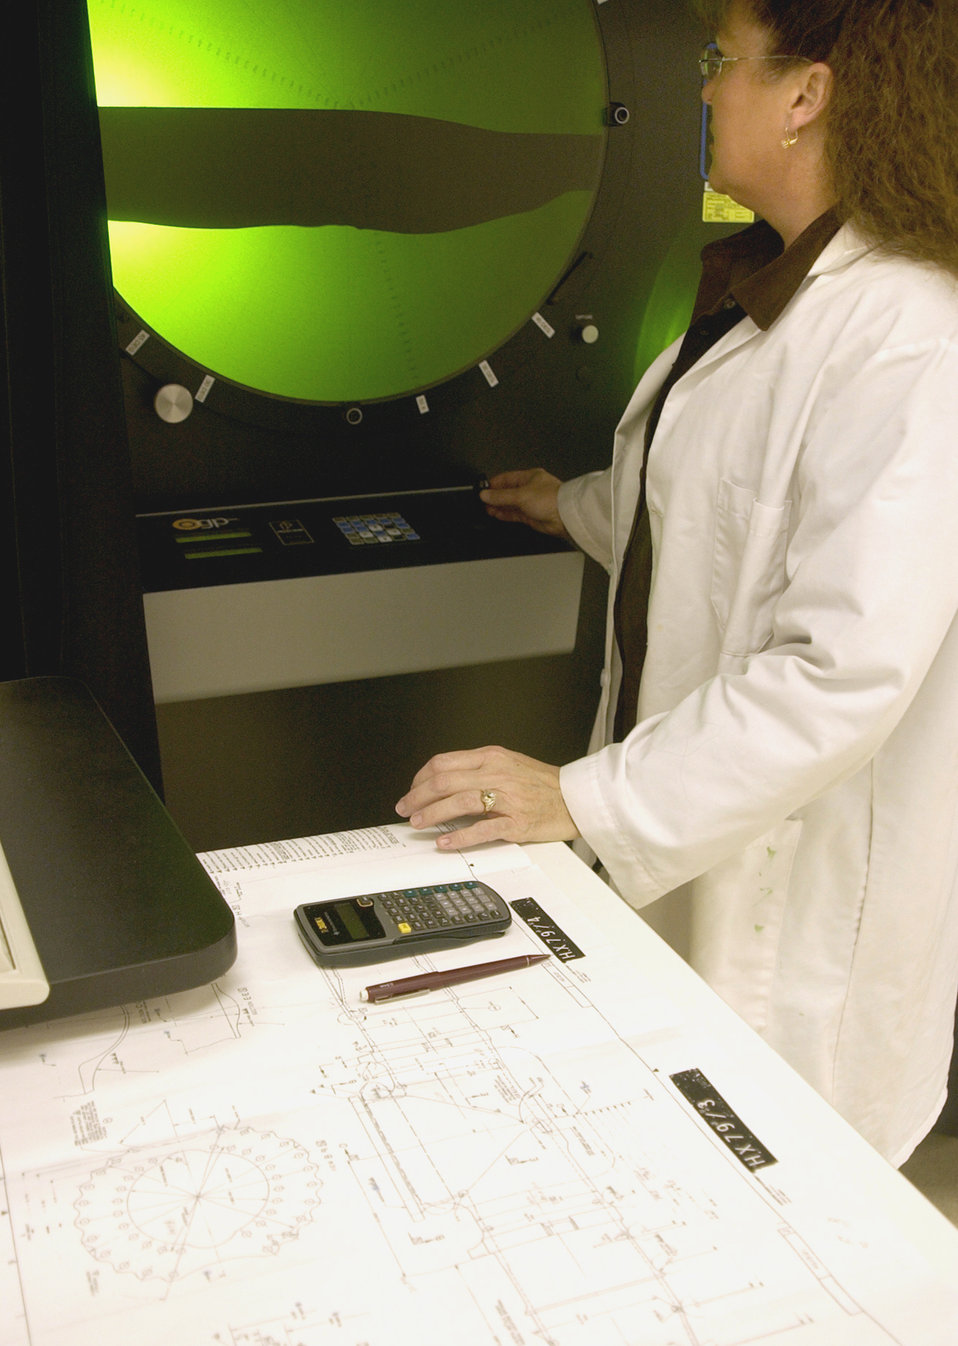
Hill employees get down to details

HILL AIR FORCE BASE, Utah -- Connie Adams uses an optical comparator to measure the mold of a cylinder. This machine is the only way to measure internal features. Ms. Adams is an engineering technician in the quality verification center here.